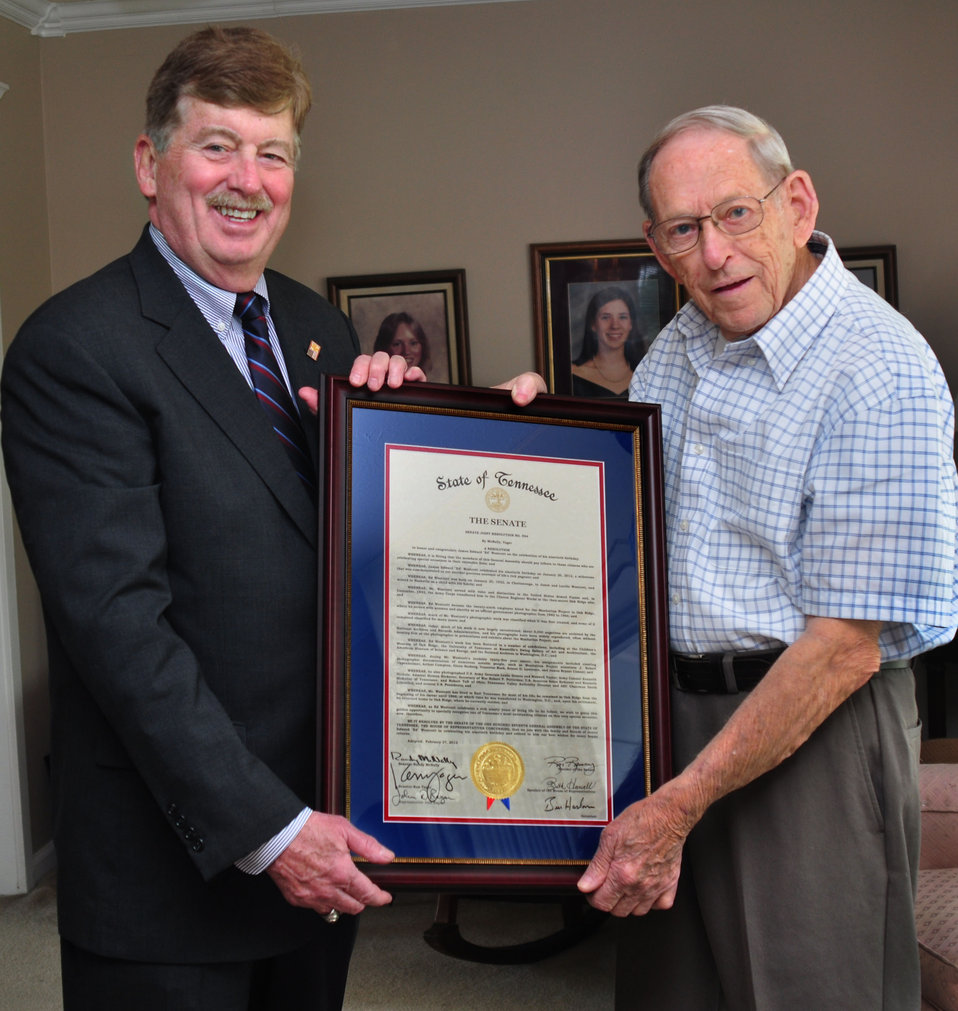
Senator Randy McNally and Ed Westcott AEC photographer

12-067-234 DOE photo by Lynn Freeny

Ed Westcott AEC photographer was given a State Senate Resolution by State Senator Randy McNally honoring his 90th birthday Oak Ridge Tennessee 3-30-2012